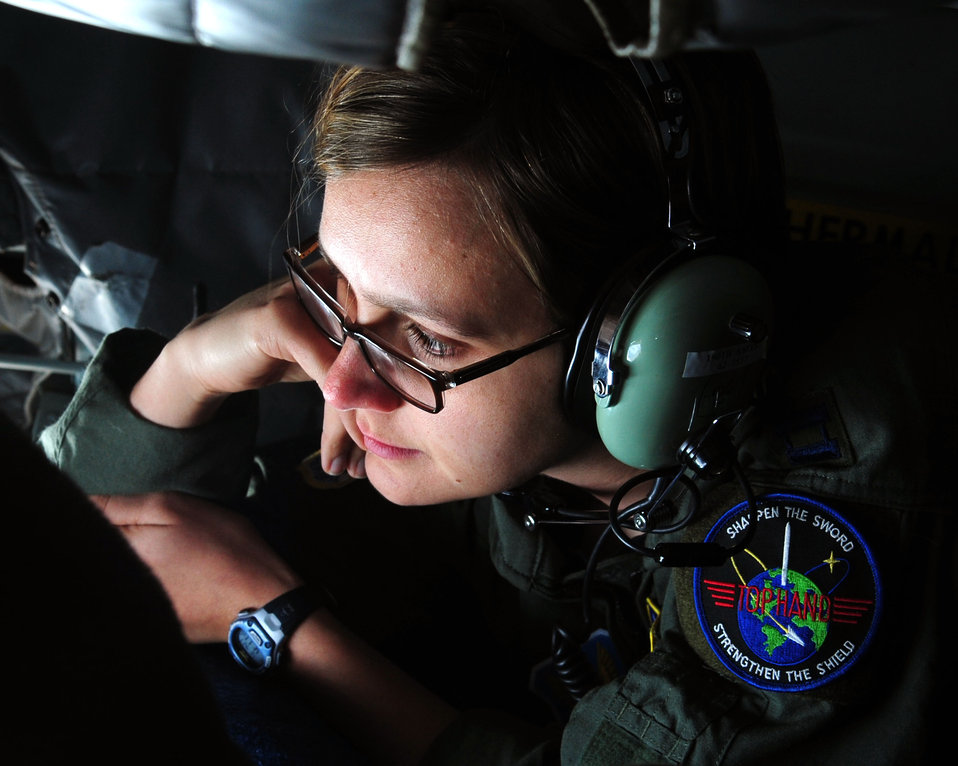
A-10C airborne refueling

Capt. Jeanie Moughan, wife of Capt. Pete Moughan, a student assigned to the 358th Fighter Squadron at Davis-Monthan Air Force Base, Ariz., watches as her husband refuels for the first time during an aerial refueling mission April 27, 2010, over Southern Arizona. The refueling is part of the A-10C Pilot Initial Qualification Course to become fully qualified A-10C attack pilot.